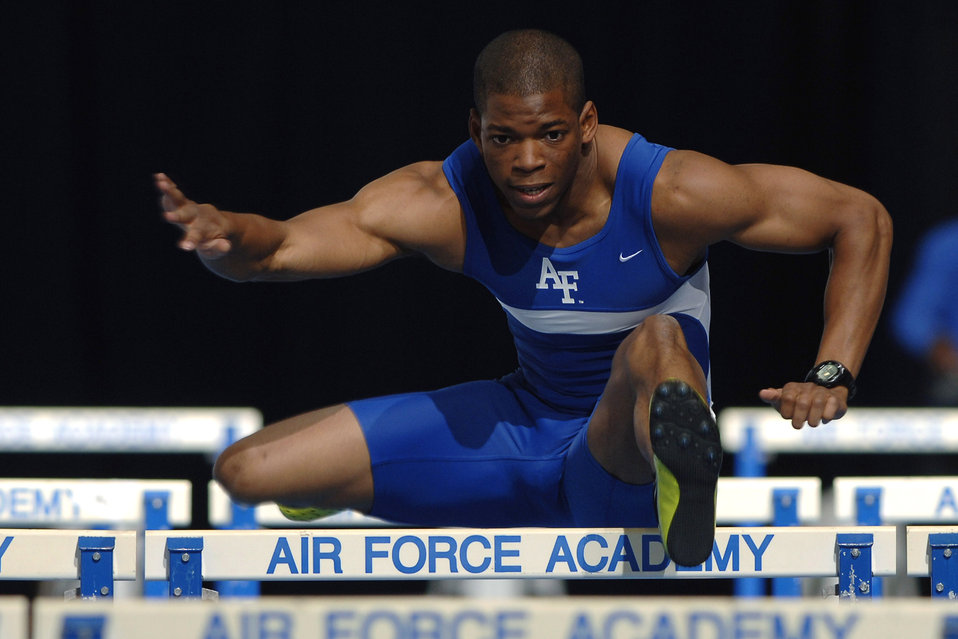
Over the hurdle

U.S. Air Force Academy junior Kellen Curry paced the field of the 60-meter men's hurdles with a winning time of 8.09 seconds at the Air Force All-Comers Meet Jan. 13 at Colorado Springs, Colo. Freshman Terry Robinson placed third (8.38), while junior Skylar Morgan finished fourth (8.52). The Air Force track and field team officially opened the season by hosting the annual competition.